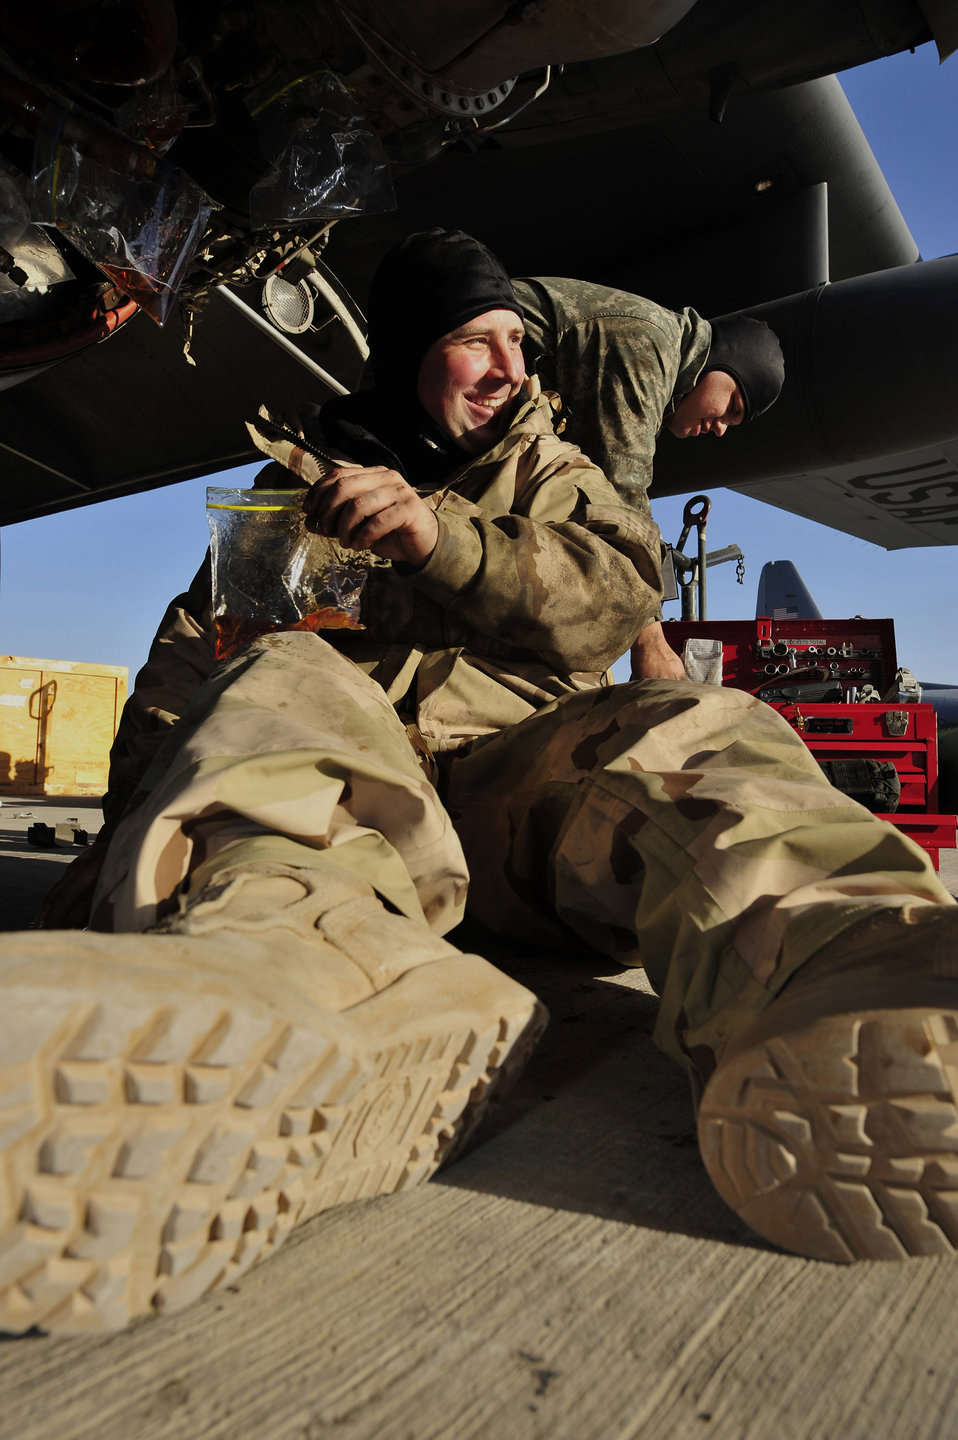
Maintaining mighty Hercules

Technical Sgt. Sam Harmon takes a moment for a laugh as he caps the oil and fuel lines before changing the auxiliary power unit of a C-130 Hercules Jan. 16 at Joint Base Balad, Iraq. Sergeant Harmon is a 777th Expeditionary Aircraft Maintenance Unit jet engine mechanic deployed from Little Rock Air Force Base, Ark. He is a native of Santa Barbara, Calif.